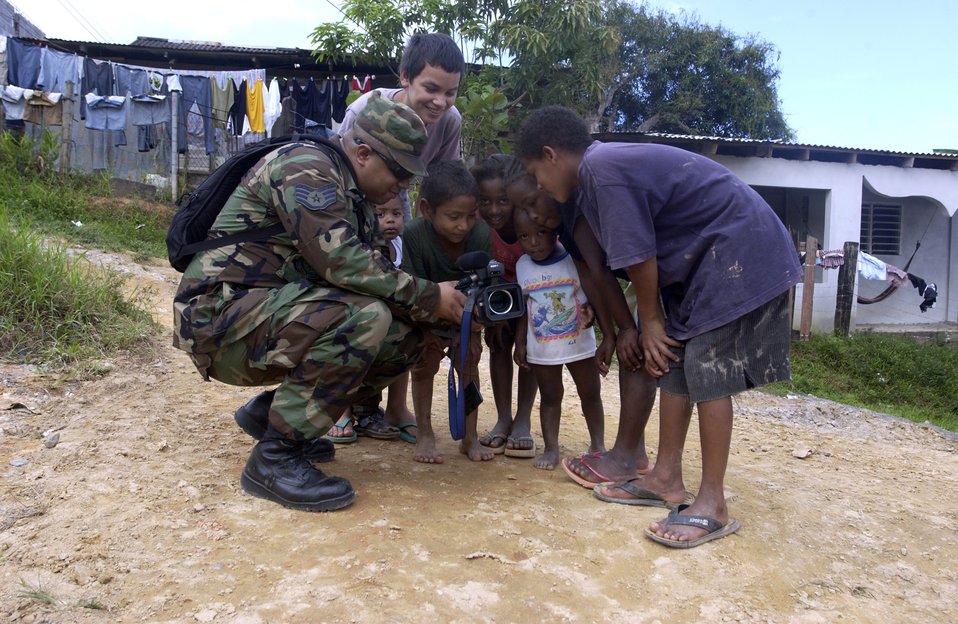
New Horizons 2006

Staff Sgt. Veuril McDavid shows local children images on his video camera's viewfinder at the New Horizons 2006 Gonzales Rivera construction site in Honduras. New Horizons, a $6 million joint U.S.-Honduras military humanitarian exercise, is building four new schools and a maternity ward. In addition, 14 health clinics will provide free medical care to people from the Mosquito Coast through San Pedro Sula. Sergeant McDavid is with the 1st Combat Camera Squadron, Charleston Air Force Base, S.C.